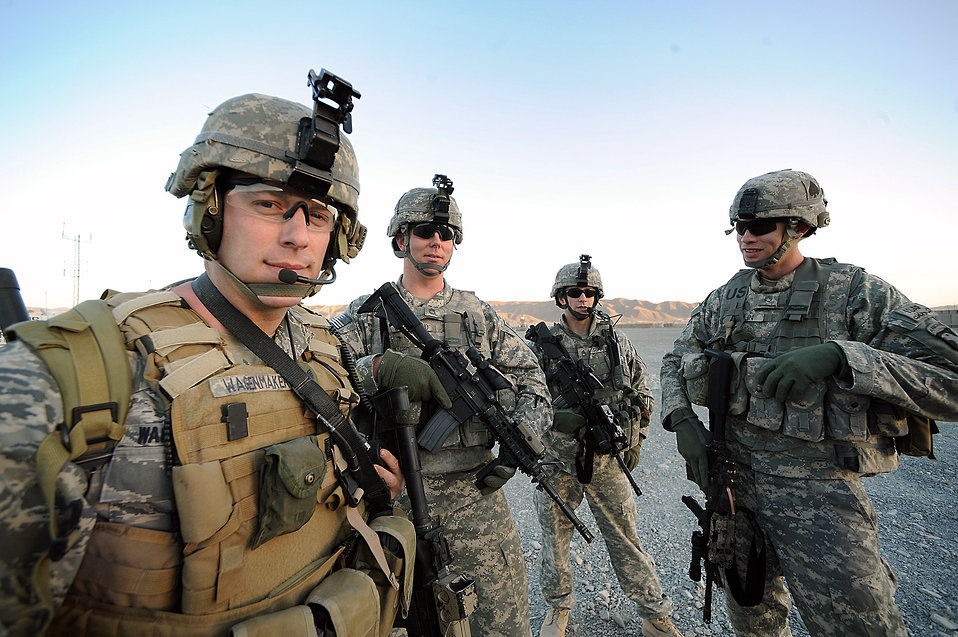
TACPs provide vital link between pilots, ground troops

Tactical air control party Airman Tech. Sgt. Harvey Wagenmaker (from left), an air liaison officer with the 2nd Battalion, 506th Infantry Regiment, stands with Army Sgt. 1st Class James Strickland, Army Staff Sgt. Chris Summers and Army Sgt. 1st Class William Fallin, members of the 2-506th fire effects coordination cell. TACP Airmen serve as liaisons between Army ground commanders and pilots in the sky to eliminate an enemy's threat to ground forces.